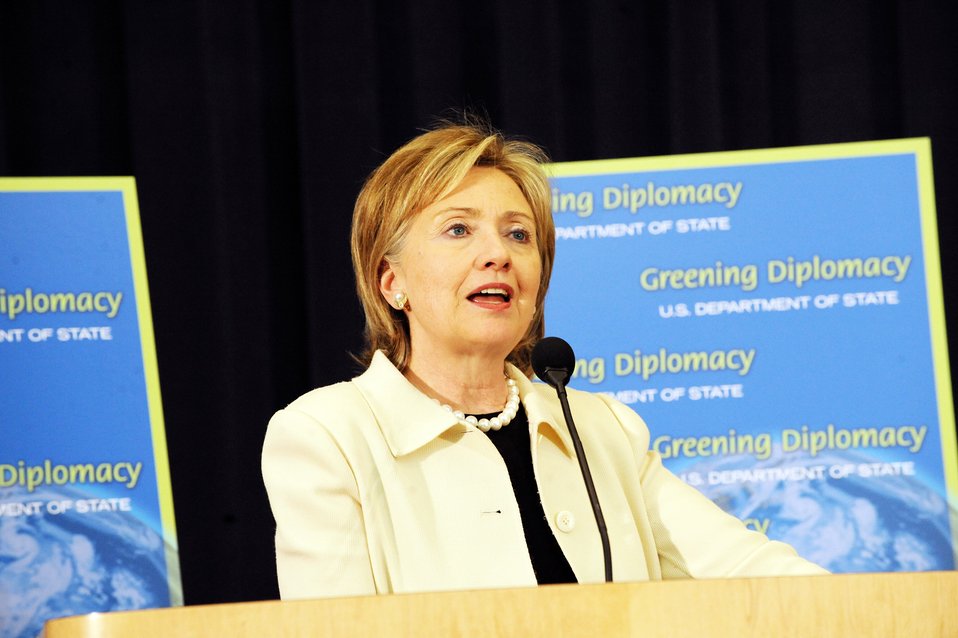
'Greening Diplomacy' Earth Day Event

U.S. Secretary of State Hillary Rodham Clinton provides the keynote address during the 'Greening Diplomacy' Earth Day Event at the U.S. Department of State in Washington, DC April 22, 2009.